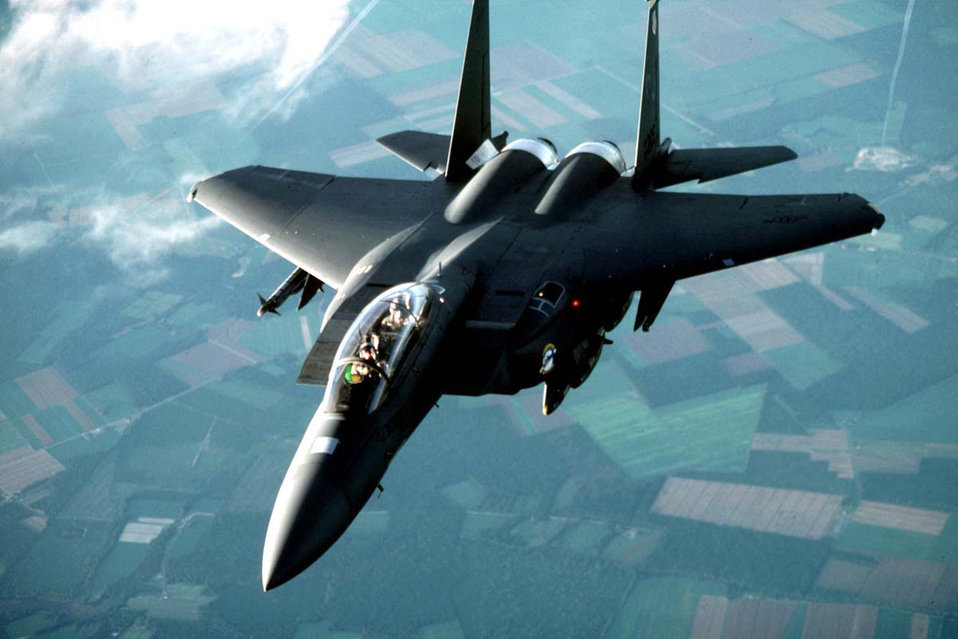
Eagle

FILE PHOTO -- The F-15 Eagle is an all-weather, extremely maneuverable, tactical fighter designed to gain and maintain air superiority in aerial combat. The Eagle's air superiority is achieved through a mixture of unprecedented maneuverability and acceleration, range, weapons and avionics. It can penetrate enemy defense and outperform and outfight any current or projected enemy aircraft.